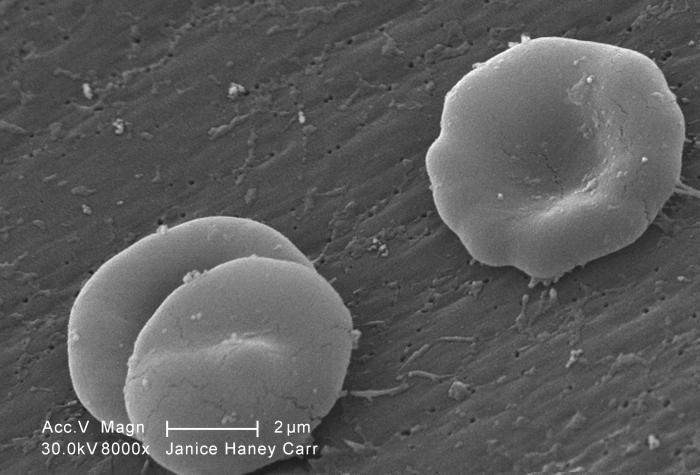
Under a high magnification of 8000X, this scanning electron micrograph (SEM) revealed some of the ultrastructural morphology displayed by red blood cells (RBCs) in a blood specimen of a 6 year old male patient that has sickle cell with hereditary persistence of fetal hemoglobin (S-HPFH). In these individuals, the presence of the persistent fetal hemoglogin reduces the severity of the consequences of the sickle cell disease, thereby, reducing the degree of cellular deformity, i.e., sickling, seen in the sickled cells. See PHIL 11692 for a digitally-colorized version of this image.